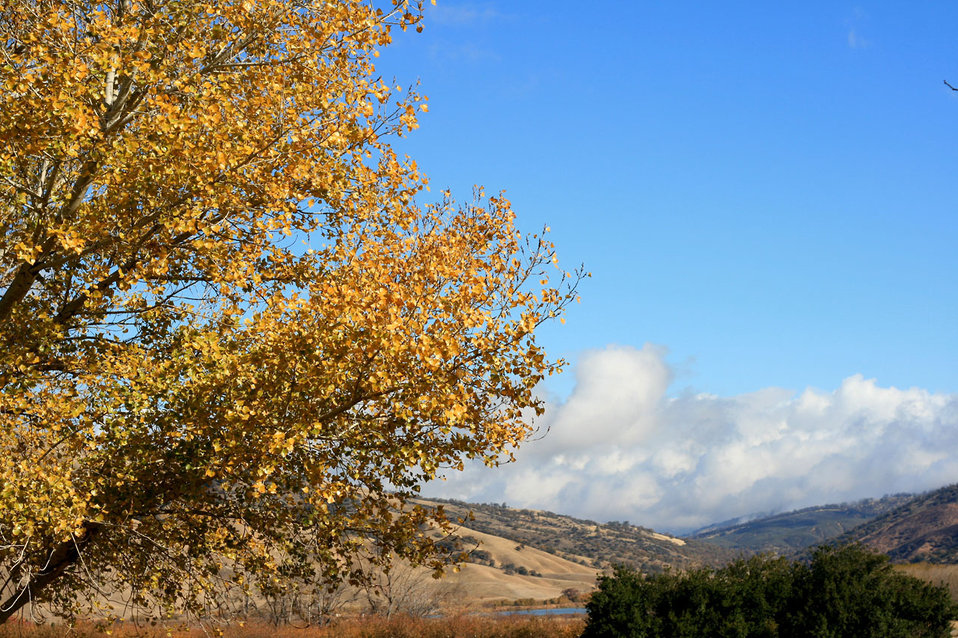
Tejon pass in late autumn

Shot near lebec, ca, on 8 dec 2007.